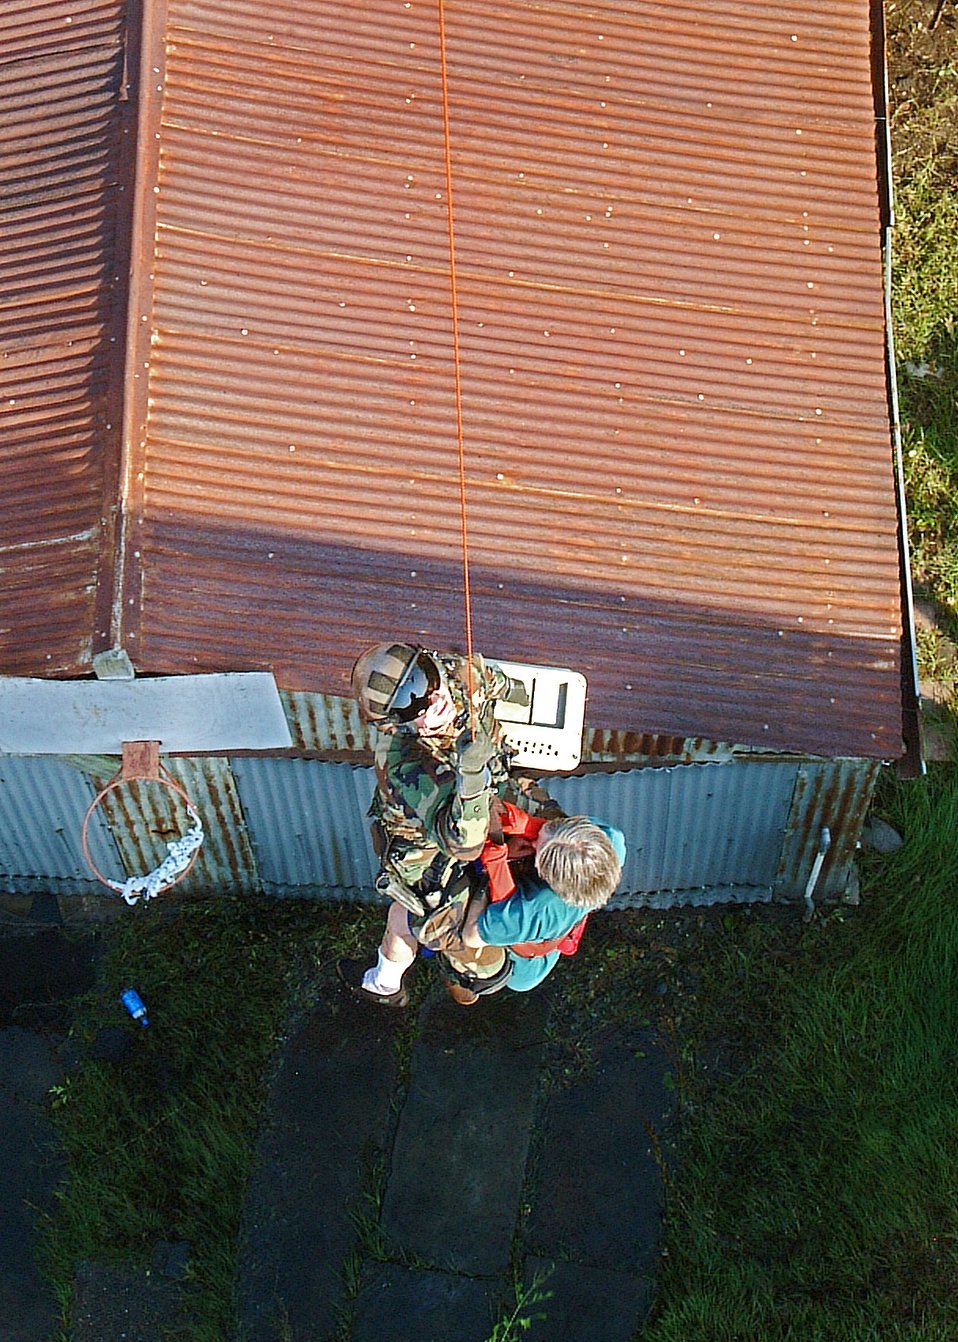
Rescue Operations

NEW ORLEANS -- Hoisted aloft from roof tops and carried aboard from broken bridge spans and other locations isolated by flooding waters, more than 2,000 people have been saved by reservists and active duty pararescue teams in the past five days.